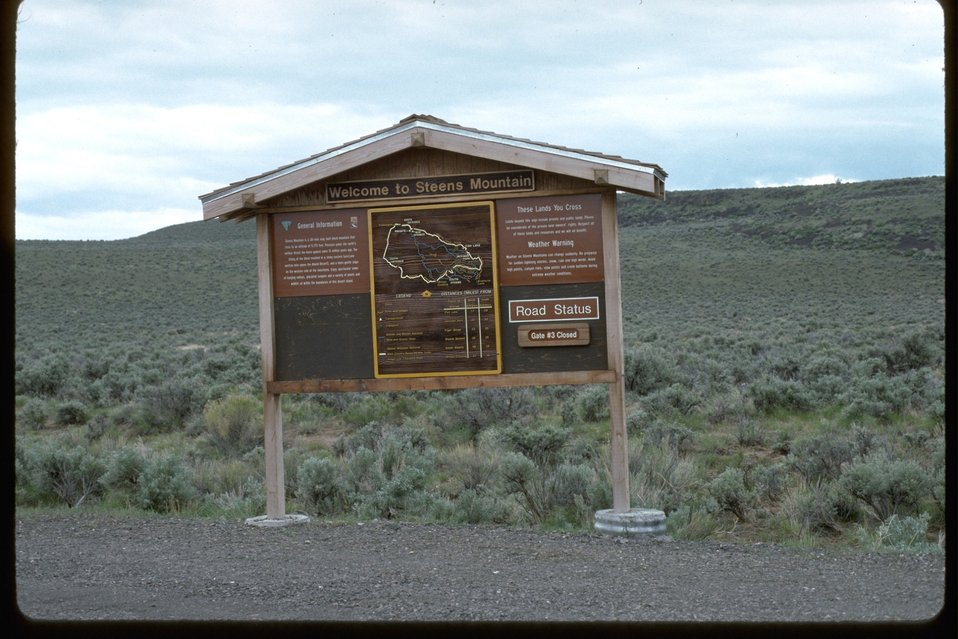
Portal sign at west end of South Loop Road, a back country byway, in Steens Mountain area.